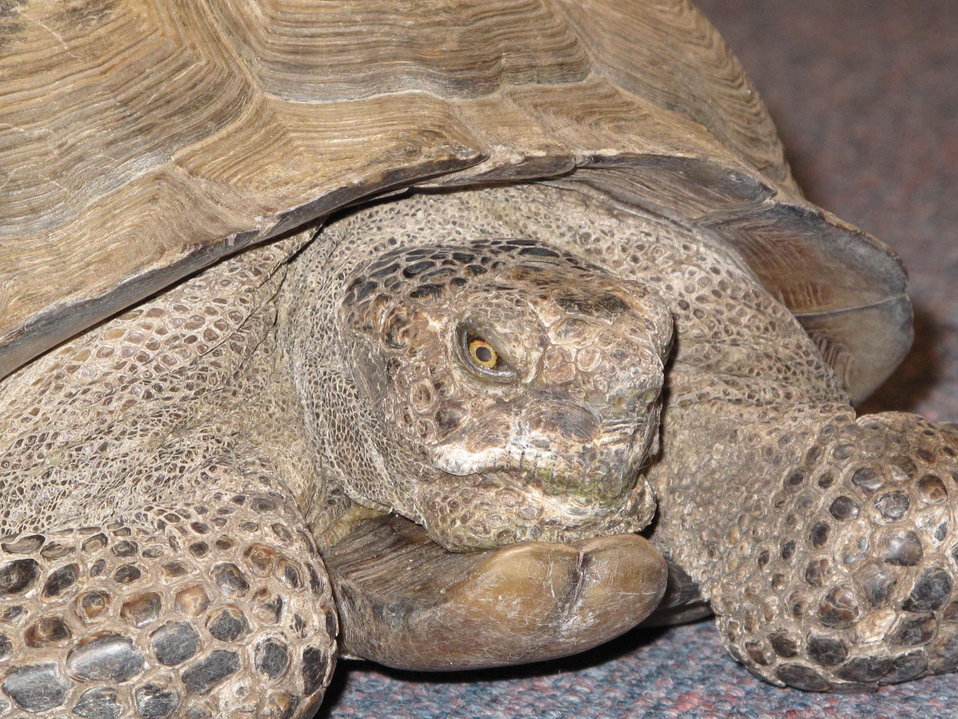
Crush the Desert Tortoise